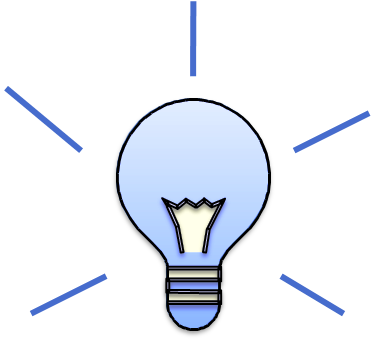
العربية: لمبة